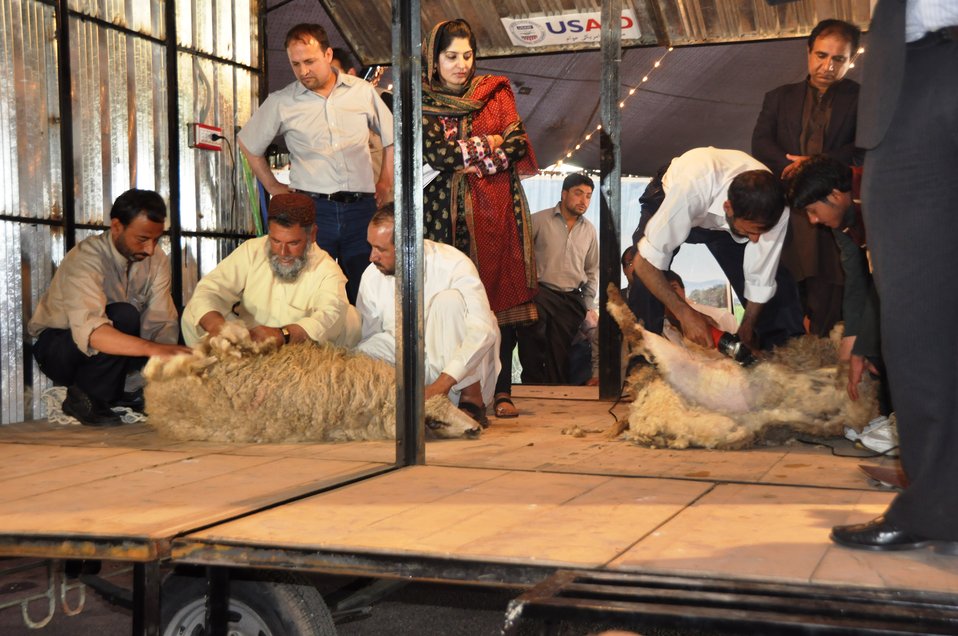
A demonstration in a USAID-sponsored mobile shearing shed showcases the difference between the old ways of shearing sheep and the new technology